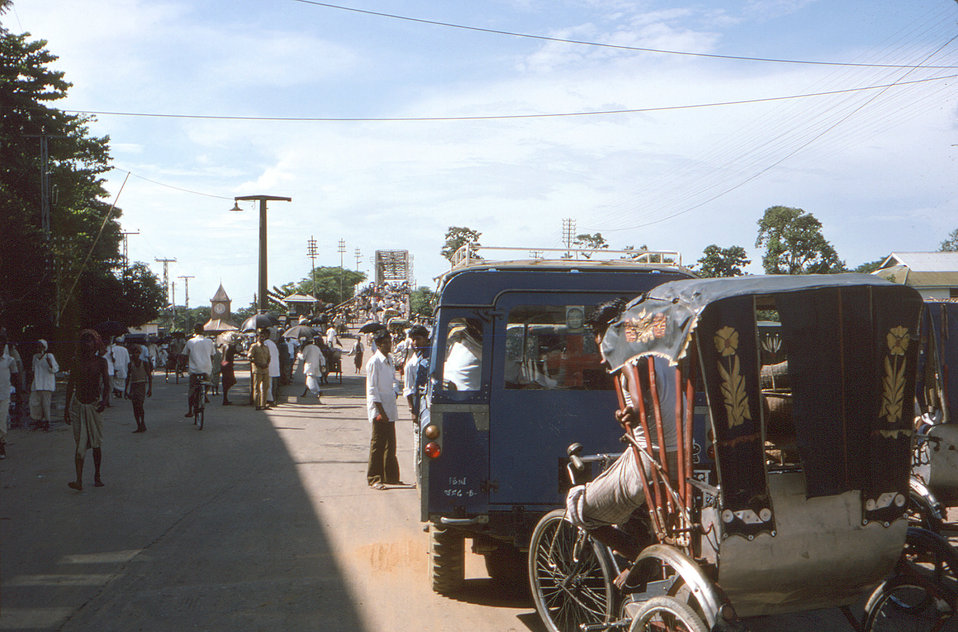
In this historic 1975 image, a city scene captured in the north-eastern Bangladesh city of Sylhet, depicted a line of vehicles awaiting passage across a one-lane bridge.